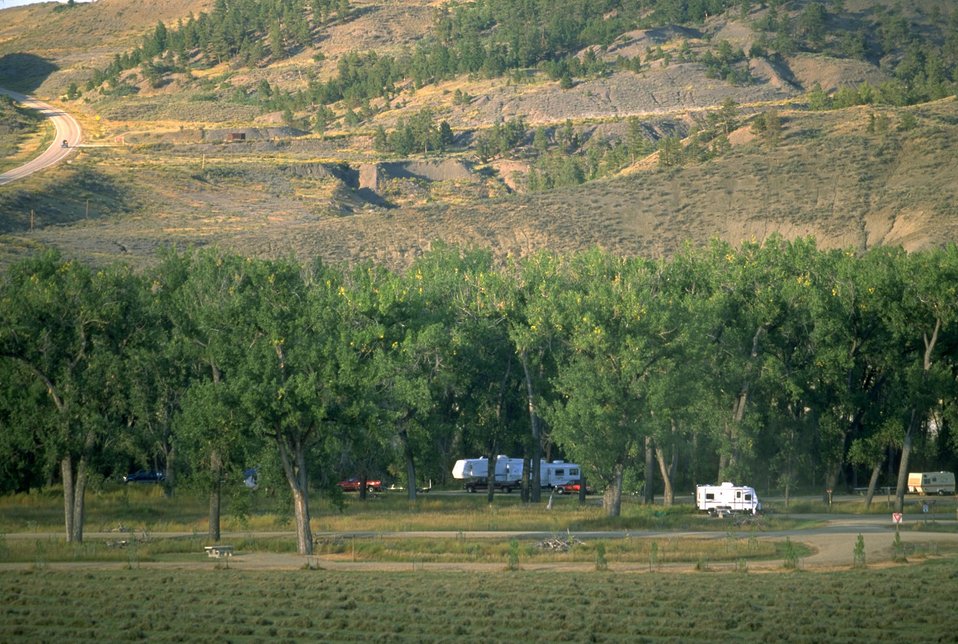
Kipp Recreation Area